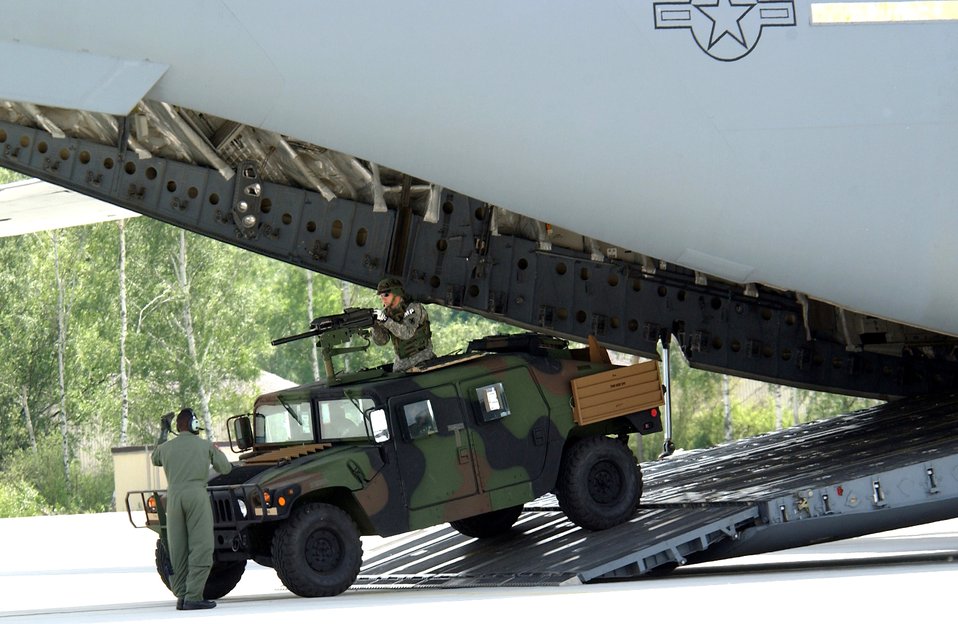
Operation Vigilant Star

A loadmaster directs a Humvee from the 230th Military Police Company exiting a C-17 Globemaster III during Operation Vigilant Star at Ramstein Air Base, Germany, on Wednesday, May 24, 2006. The purpose of this operation was to showcase the capabilities of the C-17 to NATO countries.